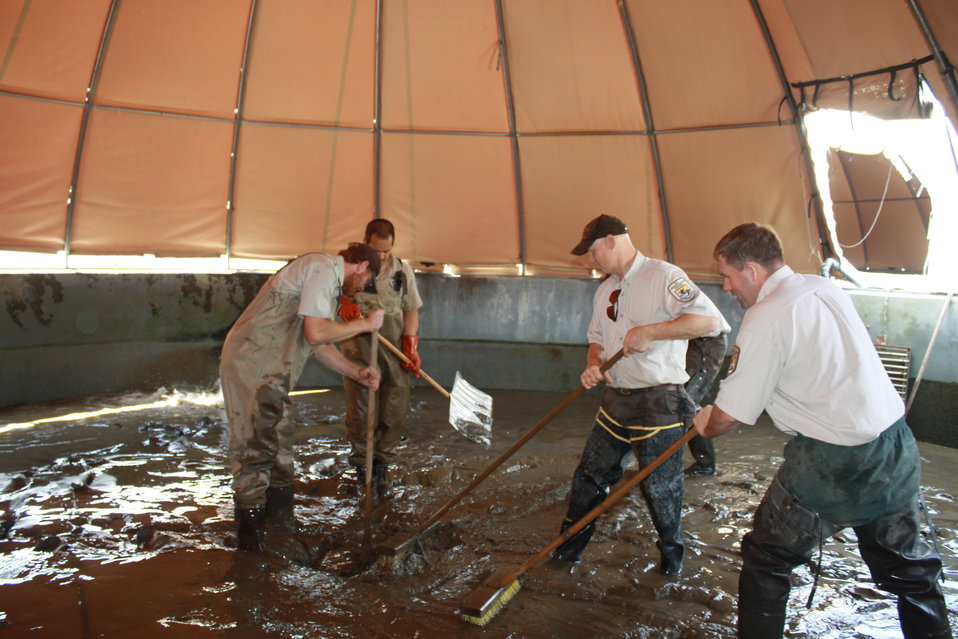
Cleaning river sediment deposited by Hurricane Irene flood waters

USFWS staff cleaning river sediment from interior of circular fish rearing pool. River water and sediment from the Hurricane Irene flood event breached some of the circular fish rearing pools. Some fish escaped and were left stranded by receding flood waters.